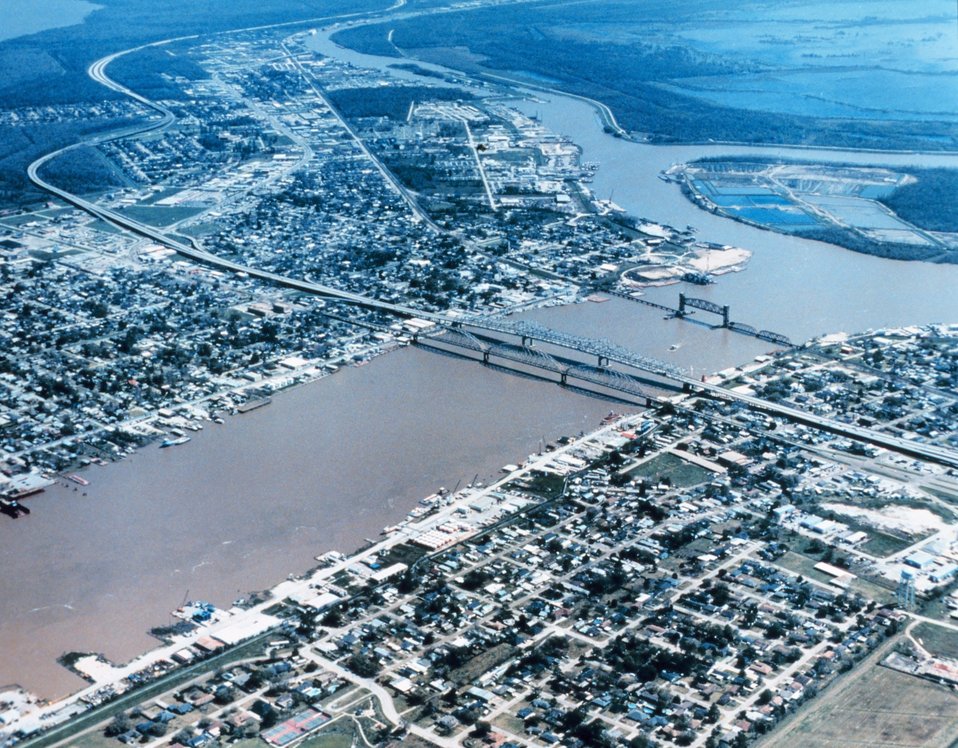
2942 North Latitude 9112 West Longitude.